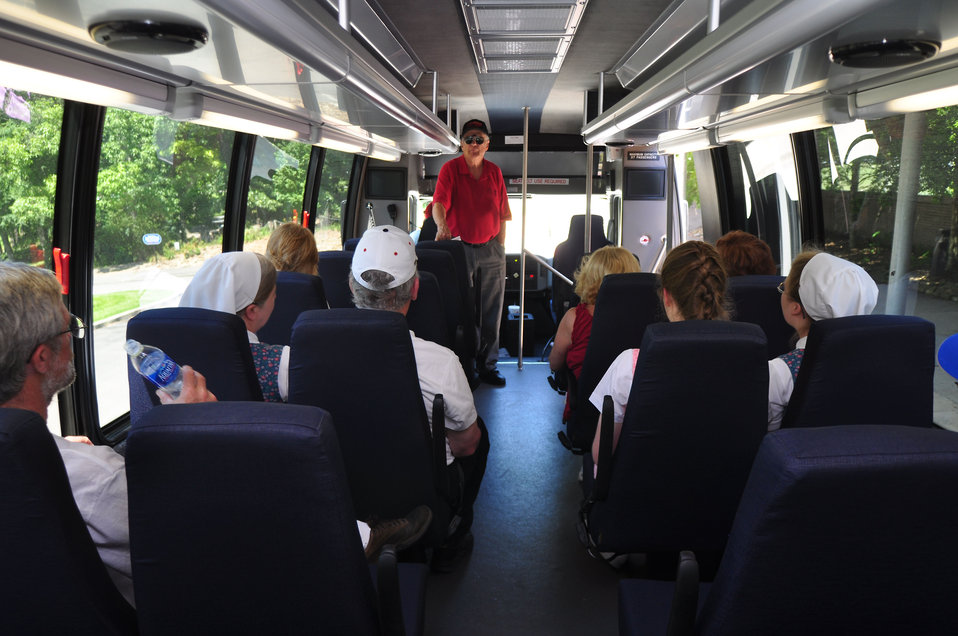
2013 Public Bus Tour kicks off June 3

09-135 DOE photo Lynn Freeny 6-1-2009 Oak Ridge Tennessee